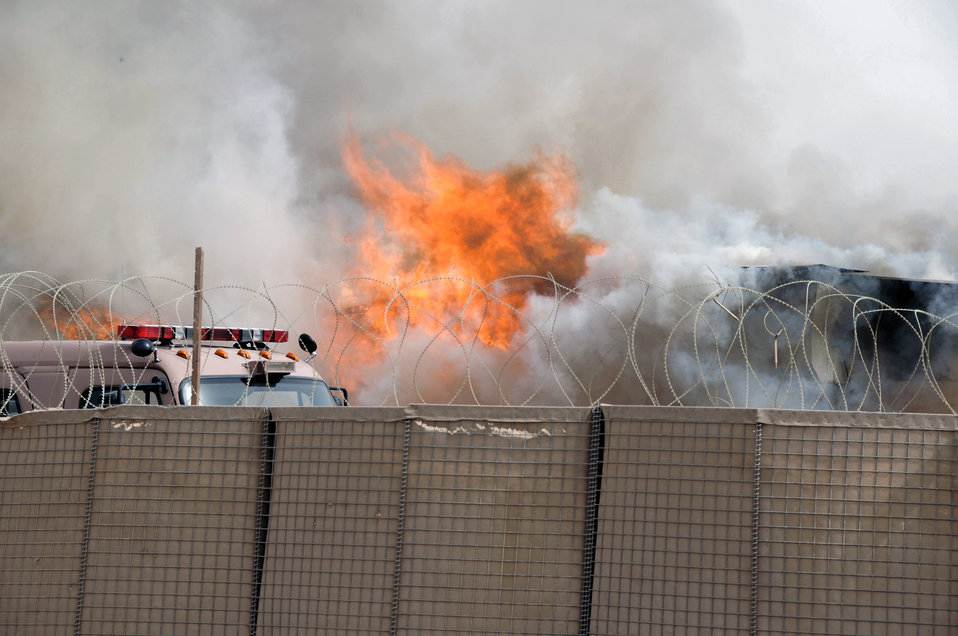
Airmen respond to coalition fire in Iraq

The 407th Expeditionary Civil Engineering Squadron firefighters repond to a blazing building in the Romanian camp April 11 at Ali Base, Iraq. The Air Force emergency response forces respond to all emergencies here including coalition partners. The building was destroyed but there were no casualties.